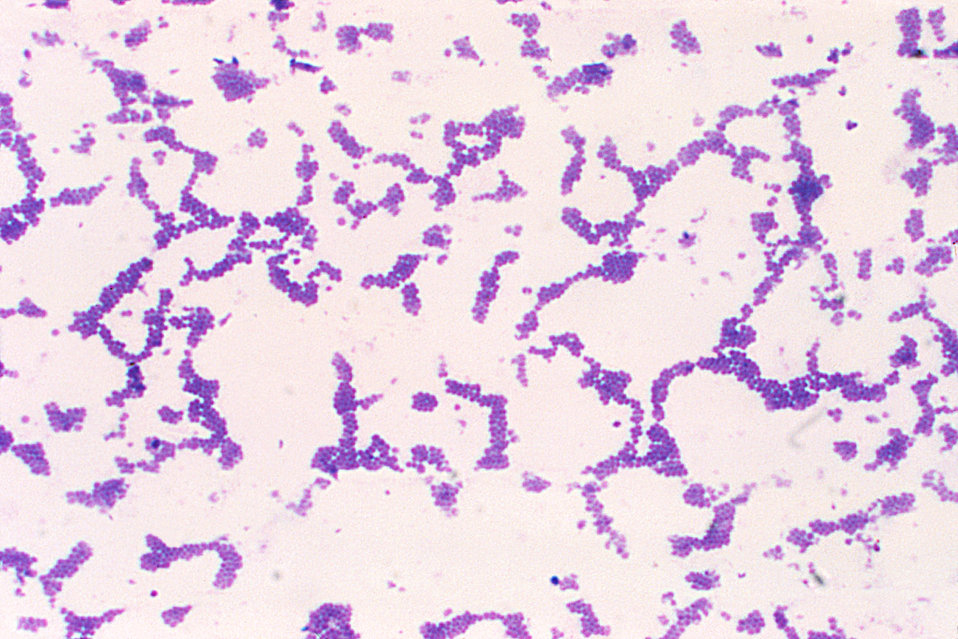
Photomicrograph of spherical (cocci) Gram-positive Staphylococcus aureus bacteria magnified 320X.